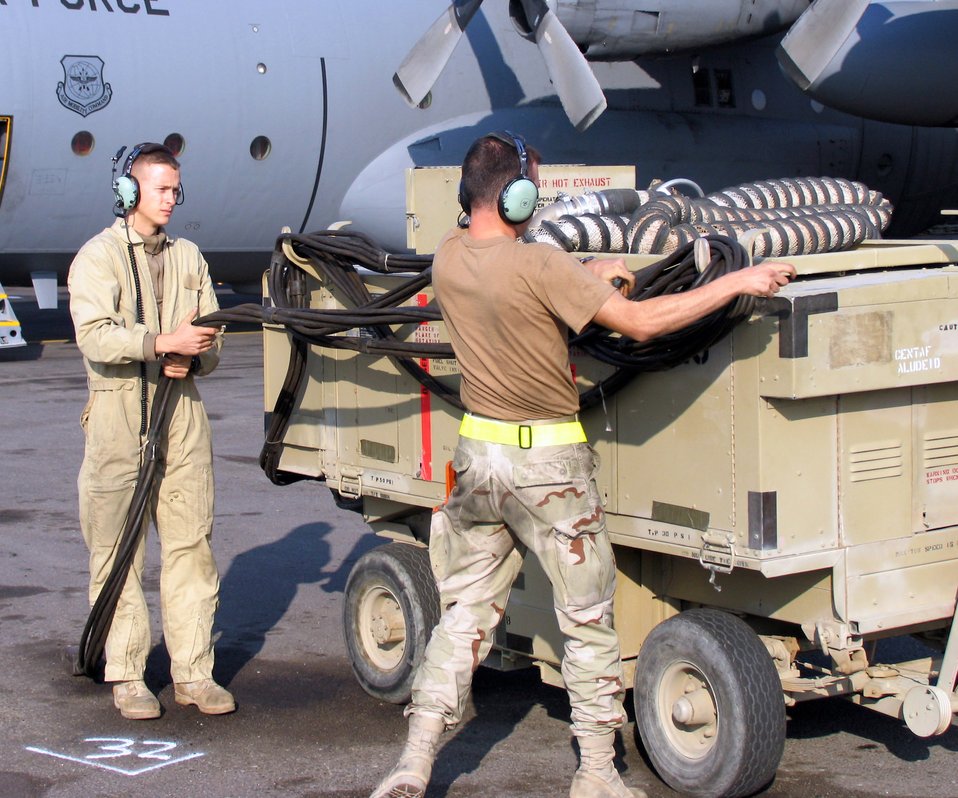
Maintainers keep aircraft flying

SOUTHWEST ASIA (AFPN) -- Senior Airman Matthew Medley (left) and Senior Airman Johnathan Feucht remove the power unit from a C-130 Hercules before the aircraft taxis on the flightline. Airman Medley and Airman Feucht are both with the 386th Expeditionary Aircraft Maintenance Squadron.